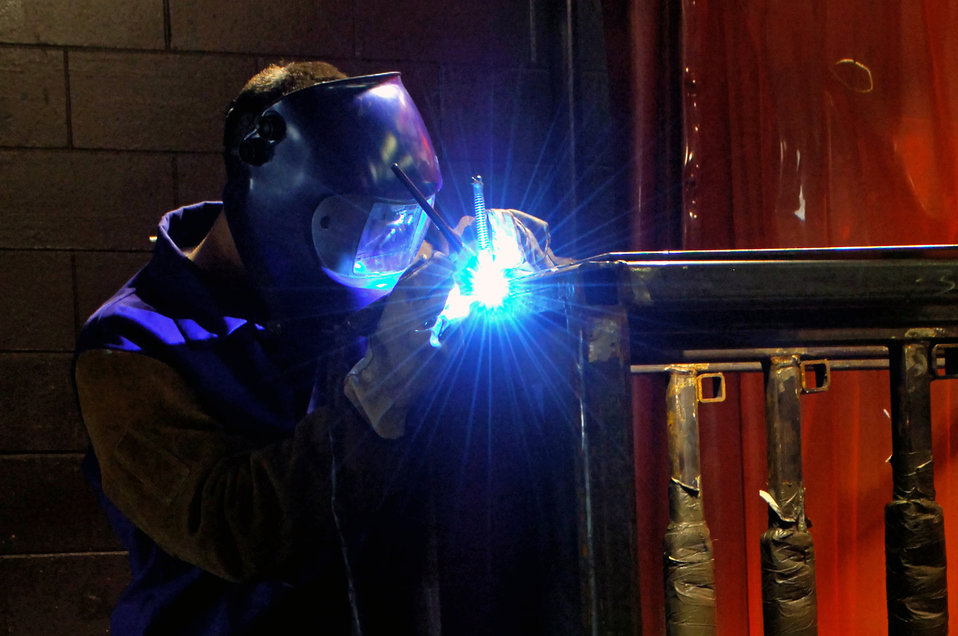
A spark of light

Airman 1st Class Tom Johnson welds a new door hinge onto a tire rack April 9 at Minot Air Force Base, N.D. The welding shop emphasizes the importance of safety due to the weight of the materials that they handle and the effects that the welding arc can have on eyesight.